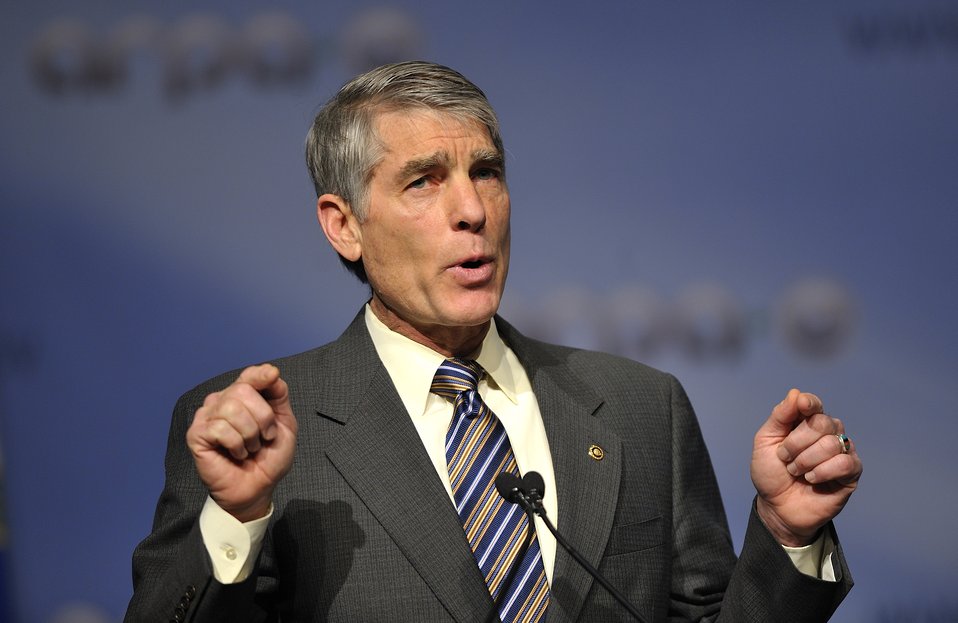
ARPA-E Energy Innovation Summit 2011, 30 of 83

Senator Mark Udall (D-CO).